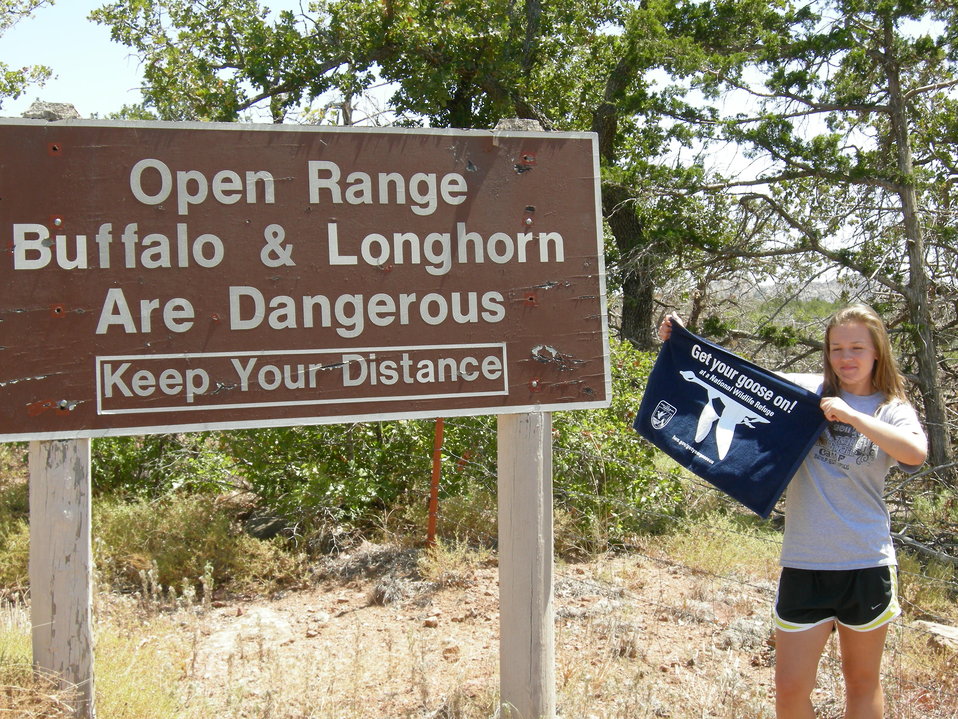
Get Your Goose On!

Wichita Mountains National Wildlife Refuge in Oklahoma.